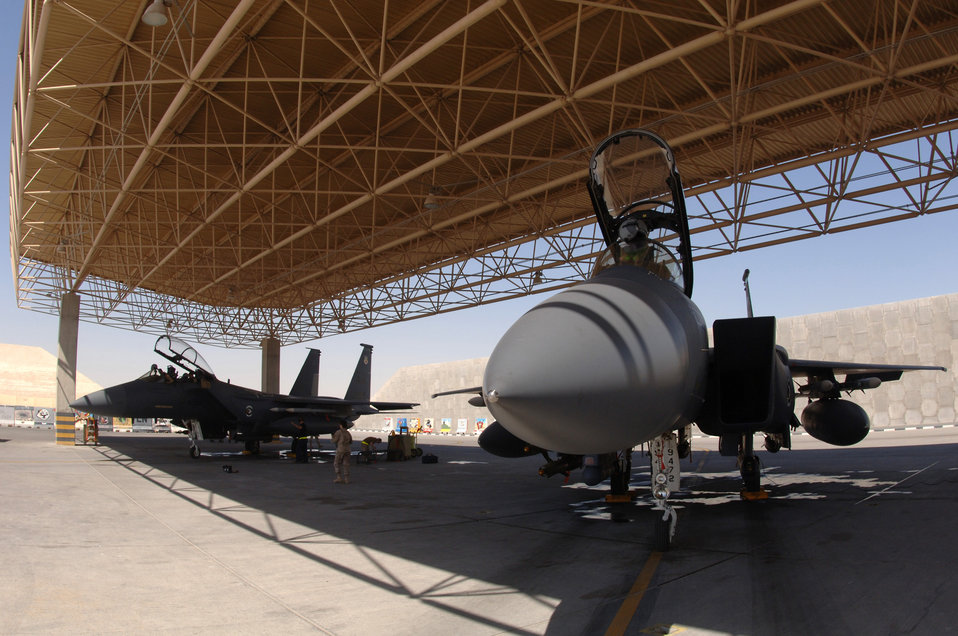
Strike Eagles ready to strike

Two F-15E Strike Eagles from the 336th Expeditionary Fighter Squadron are ready for takeoff Wednesday, March 8, 2006, at a deployed location in Southwest Asia. The 336th is home-based at Seymour Johnson Air Force Base, N.C.